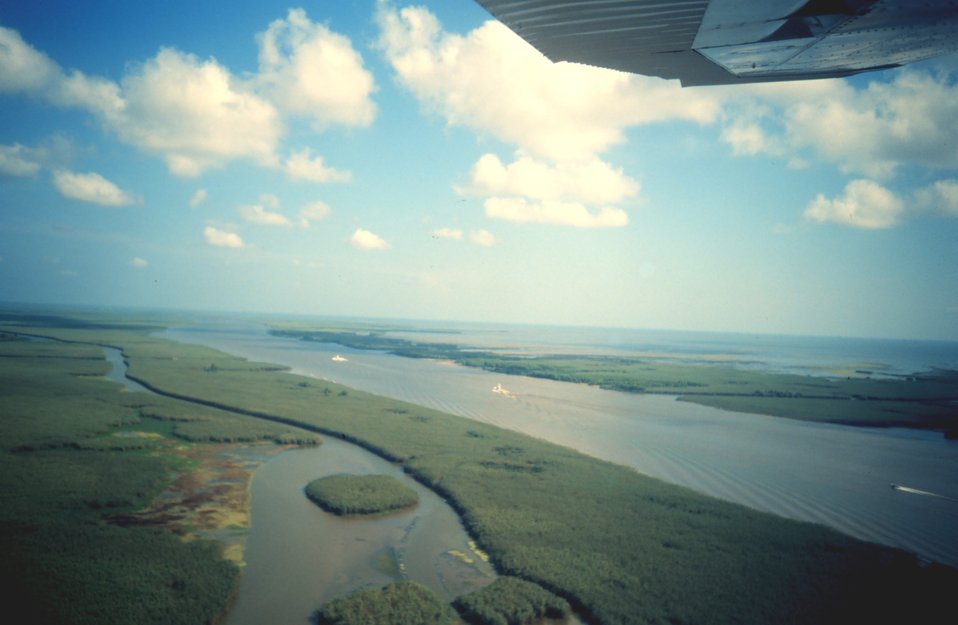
Flying over a stretch of the Intra-coastal Waterway.